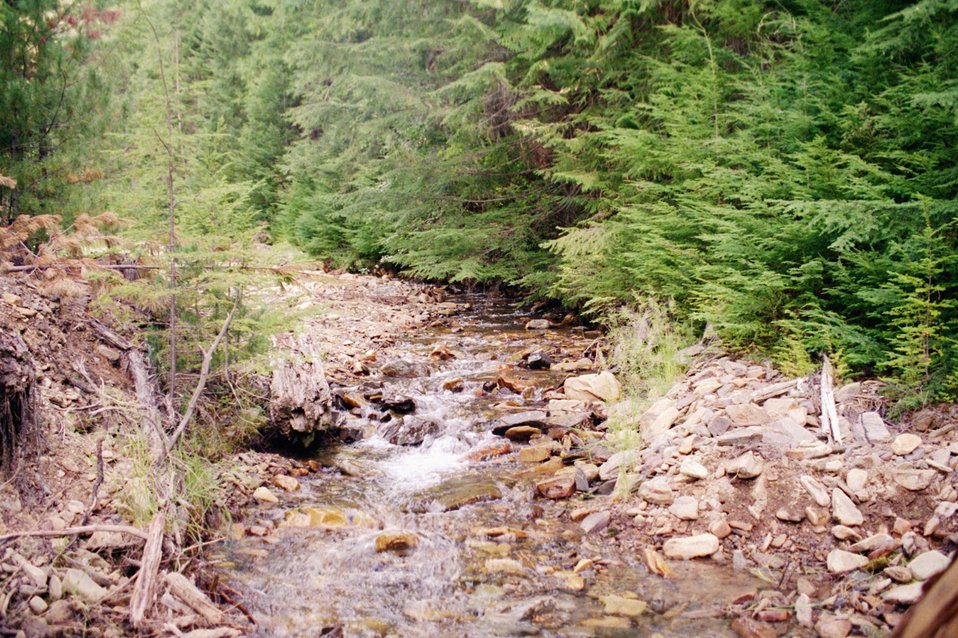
Riparian Area Stream Restoration from mining damage near Pinecreek Couer D'Alene Field Office UCSC Upper Columbia Salmon Clearwater District